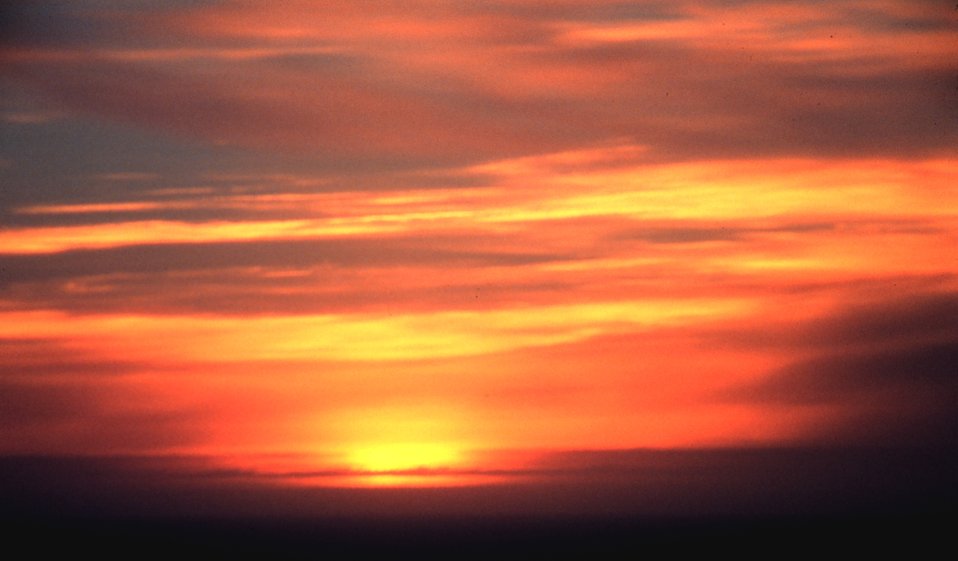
Haze and clouds obscure the setting sun